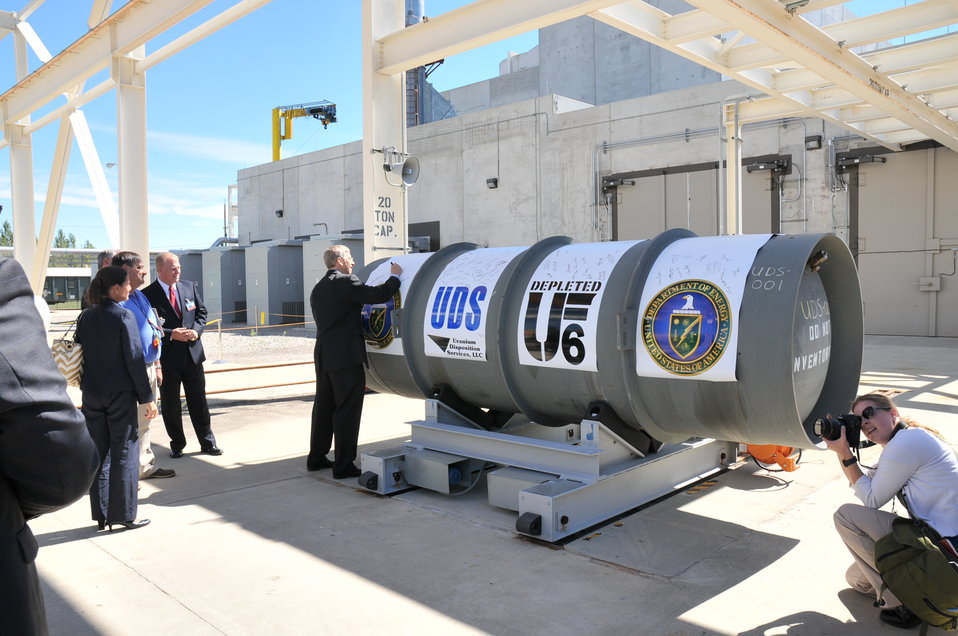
Deputy Secretary Poneman signs a cylinder commemorating the start-up of hot functional testing operations at the of Depleted Uranium Hexafluoride (DUF6) Conversion Plant during a ceremony September 9 at the Portsmouth Gaseous Diffusion Plant in Piketon, Ohio. Looking on to his left is Ohio Governor Ted Strickland.